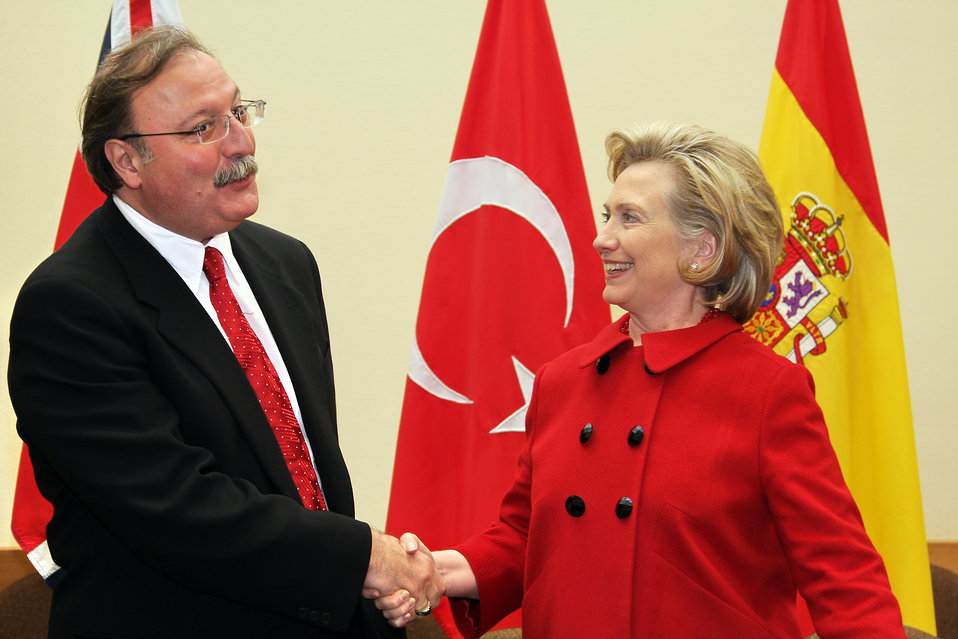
Secretary Clinton Meets With Georgian Foreign Minister

U.S. Secretary of State Hillary Rodham Clinton participates in a bilateral meeting with Spanish Foreign Minister Miguel Angel Moratinos in Brussels, Belgium December 4, 2009.